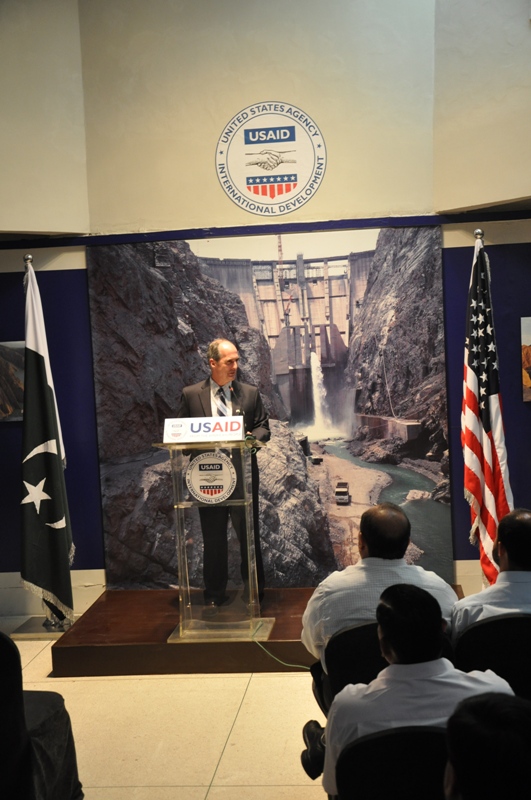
USAID Provinicial Mission Director Punjab talking at the Retrospective Exhibition